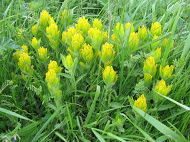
Golden paintbrush

Scientific name: Castilleja levisecta
Status: Threatened